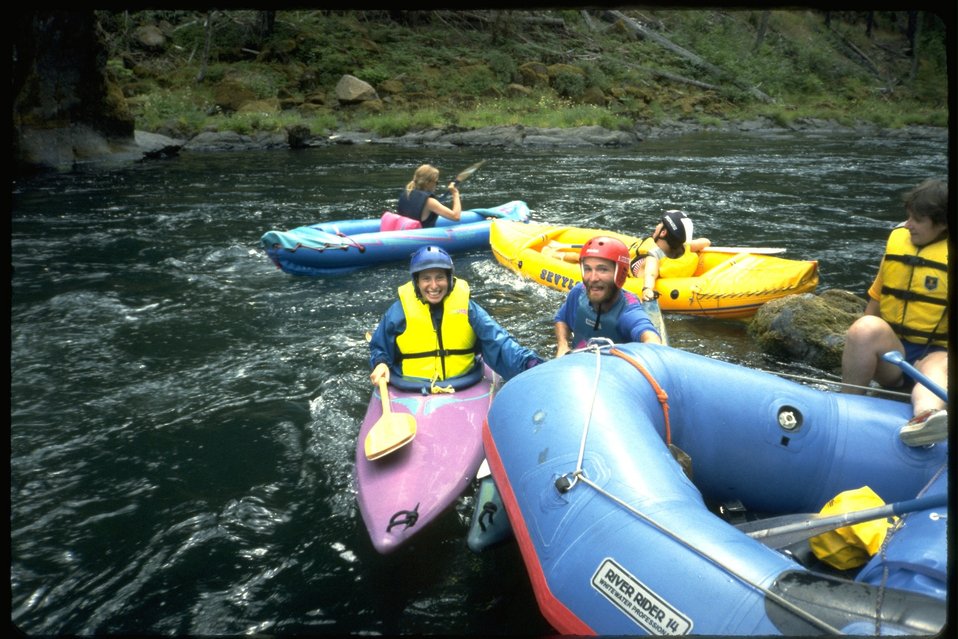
Kayaking and rafting.